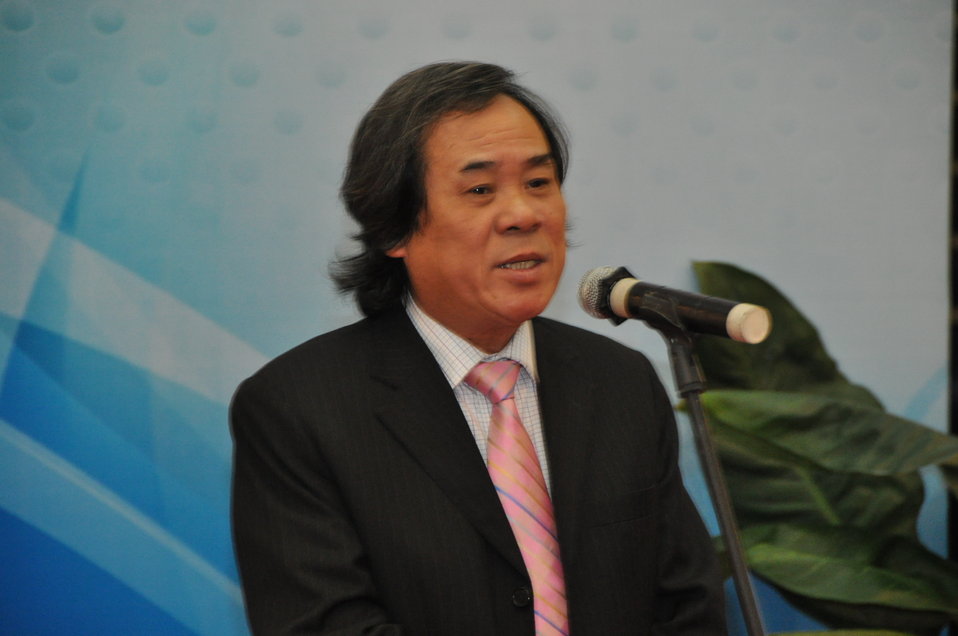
Ministry of Culture, Sports and Tourism Director General Nguyen Van Tinh

Safe Medicine Exhibition